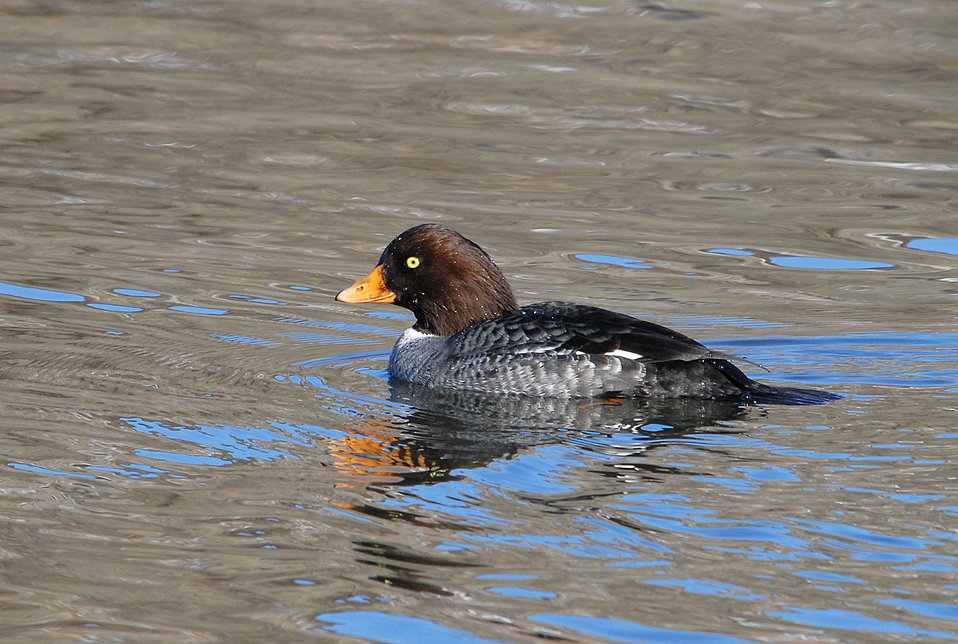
Barrow's Goldeneye (female)